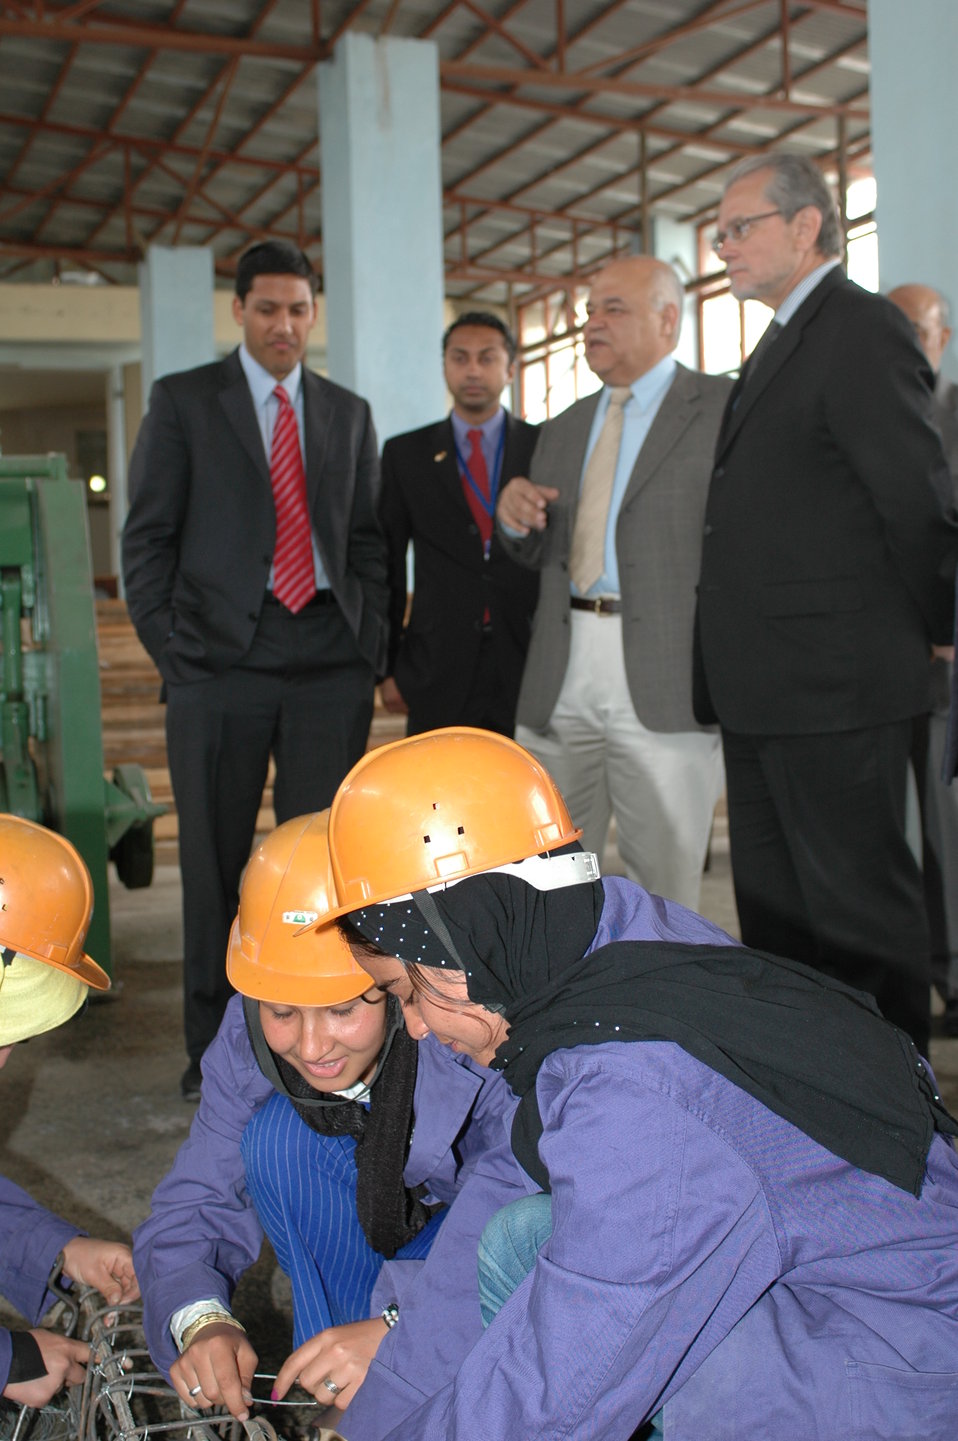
Dr Shah Visits Votech in Kabul